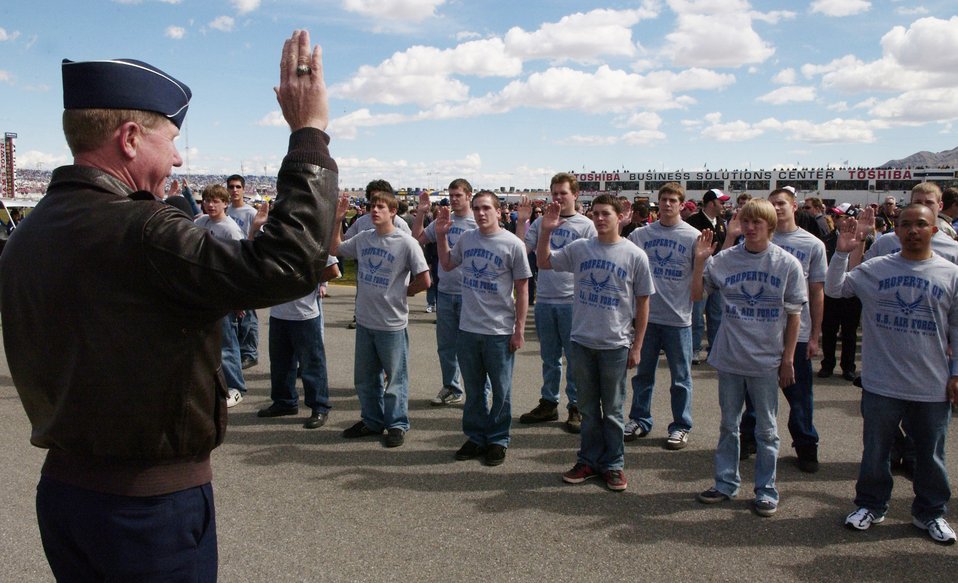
NASCAR flies

Brig. Gen. Robertus Remkes, Air Force Recruiting Service commander, Randolph Air Force Base, Texas, delivers an oath of enlistment to 24 Air Force delayed entry program members prior to the start of the UAW-Daimler Chrysler 400 Nextel Cup race, Sunday, March 12, 2006, held at the Las Vegas Motor Speedway.